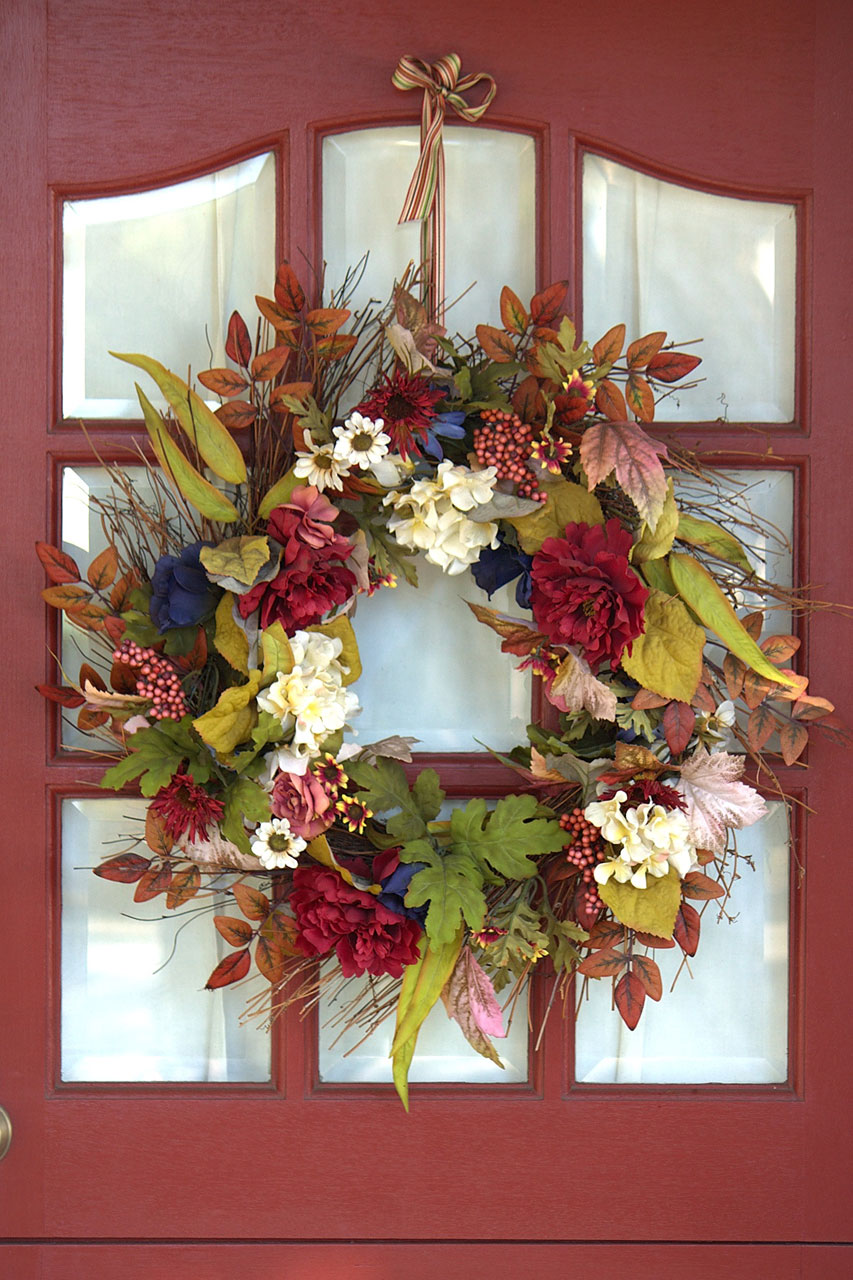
Floral wreath on a red door

Wreath with autumn flowers, leaves and dried berries decorates a red door.